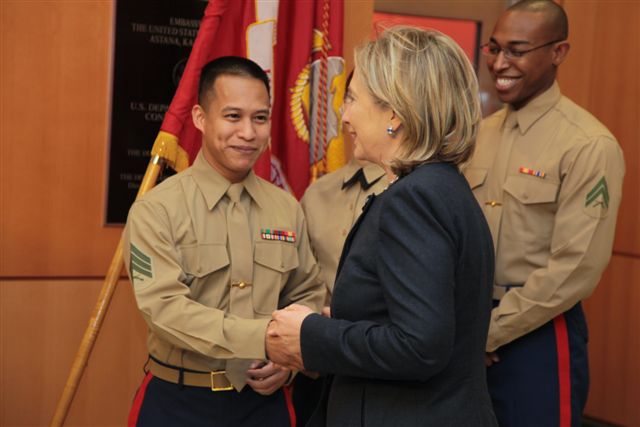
Secretary Clinton Meets With U.S. Marines

U.S. Secretary of State Hillary Rodham Clinton meets with U.S. Marines at the U.S. Embassy Astana in Astana, Kazakhstan, on December 1, 2010.